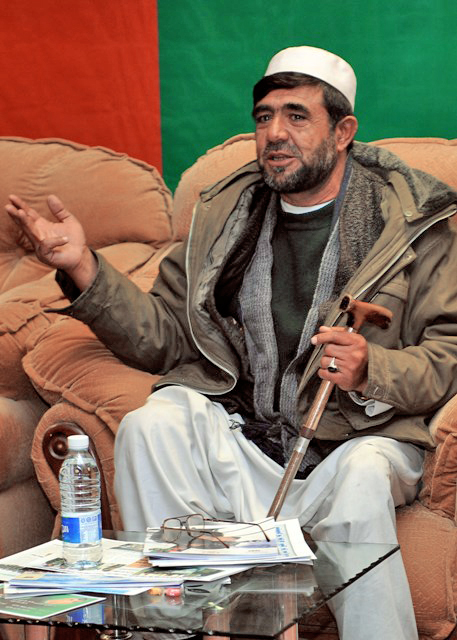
Program empowers Afghan citizens to protect against threat of IED attacks

A local citizen who lost his leg from an improvised explosive device detonation encourages people to help protect one another by reporting enemy activities through the Department of Defense Rewards Program and Operation Jaeza Dec. 7, 2009 in Afghanistan. The citizen's sons had to drop out of school following their father's disability to help support the family. Reporters interviewed Afghan Maj. Gen. Abdul Khaliq and Army Brig. Gen. Kurt Fuller about the monetary rewards program to gain actionable information or non-lethal assistance from citizens during a press conference at Forward Operating Base Thunder, Gardez District, Afghanistan. General Khaliq is the the Afghan National Army 203rd Corps commander. General Fuller is 203rd Corps deputy commander and the Combined Joint Task Force-82 deputy commander.